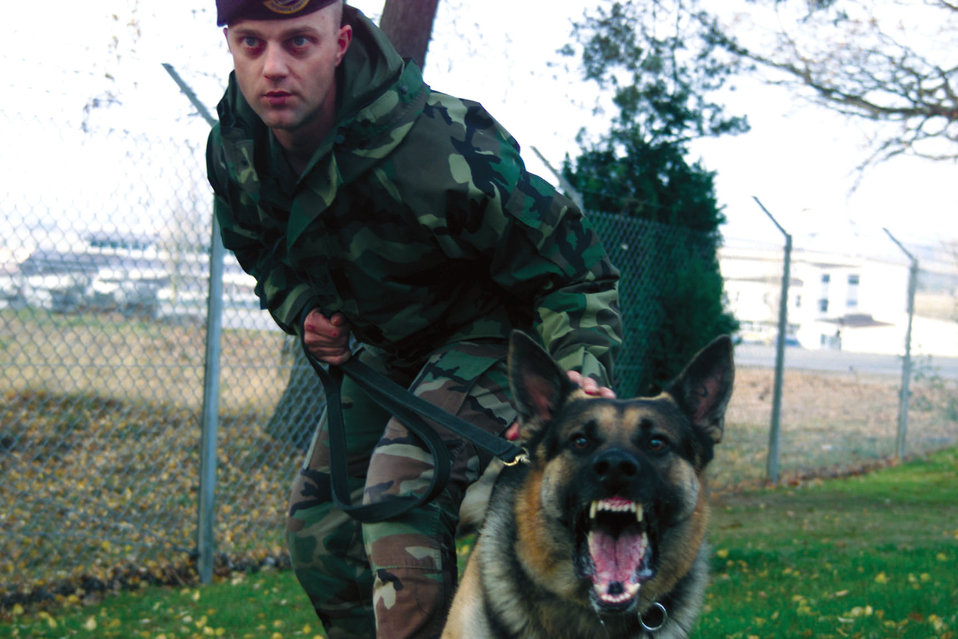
Down, boy!

SPANGDAHLEM AIR BASE, Germany -- Staff Sgt. Todd Smith controls a riled German shepherd, Art, during attack training here. Art recently graduated from technical school at Lackland Air Force Base, Texas, and will be polished during on-the-job-training here in a process similar to that of first-term airmen. Smith is a military working dog trainer assigned to the 52nd Security Forces Squadron.